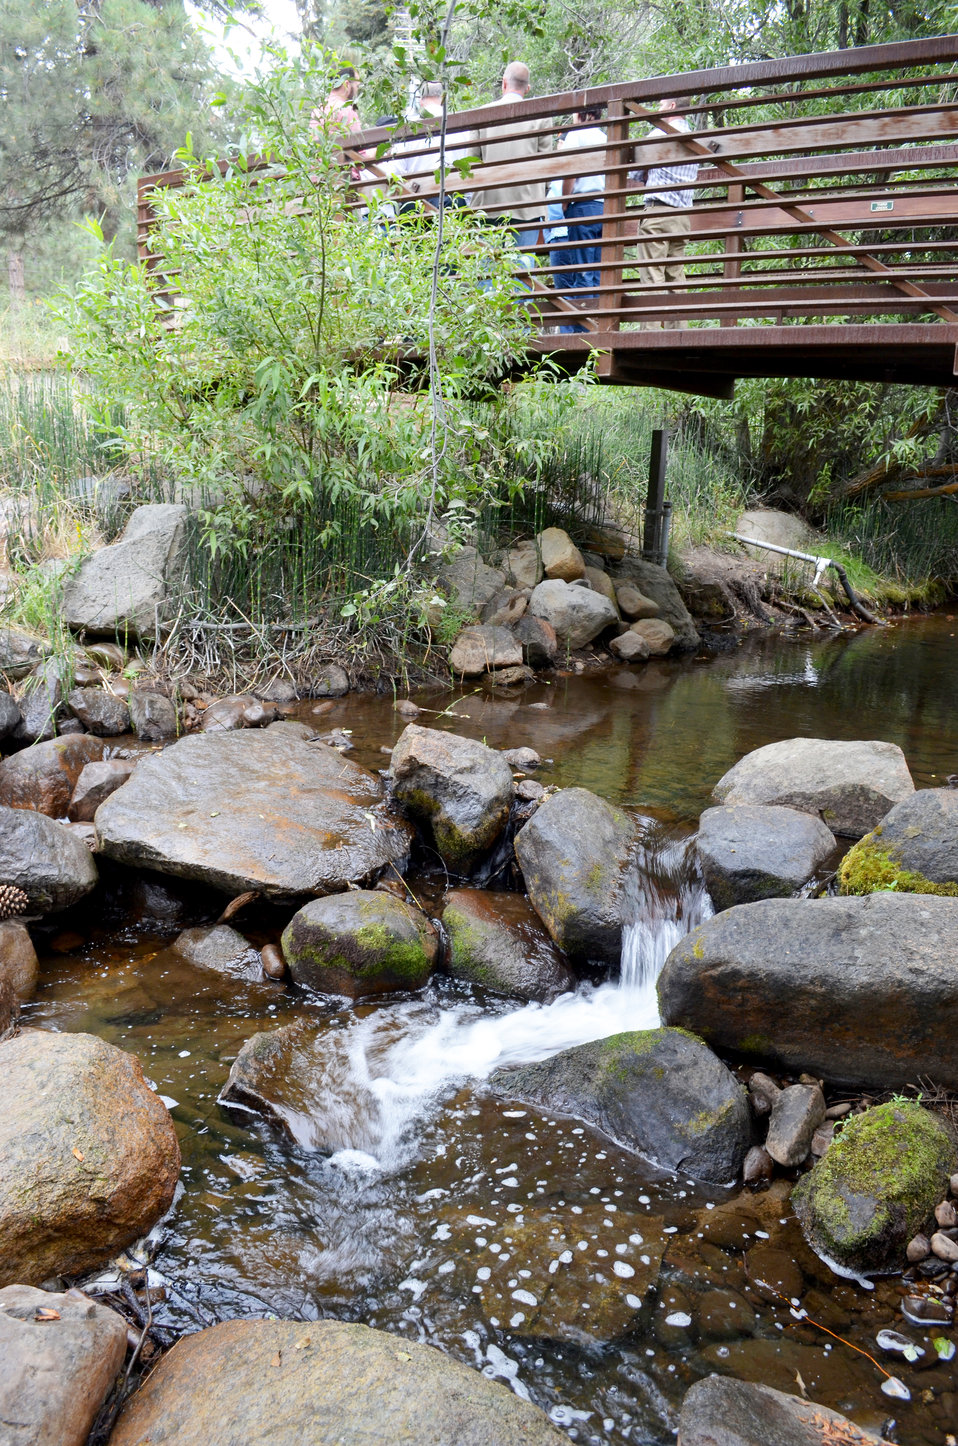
New pedestrian bridge over Third Creek

130819-A-QE256-026 – A newly installed pedestrian bridge spans Third Creek near Incline Village, Nev., shown Aug. 19, 2013. The U.S. Army Corps of Engineers Sacramento District and the Incline Village General Improvement District recently completed an ecosystem restoration project along Incline Creek and Third Creek. Both creeks have been a large source of sediment for nearby Lake Tahoe, reducing its prized clarity. The restoration project returned the creeks to a more natural state, reducing their sediment discharge into the lake. Newly planted vegetation along the creek bank helps control erosion, a major source of sediment discharge.